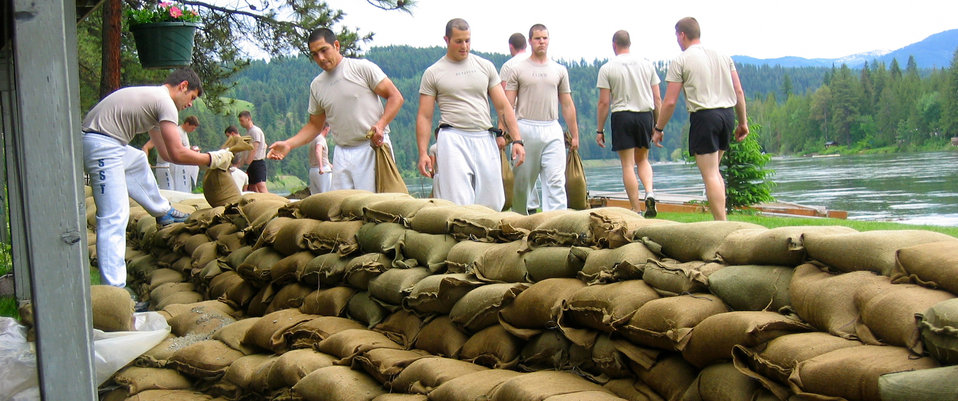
Fairchild Airmen save homes from flooding

Forty student candidates and instructors from the 336th Training Group Survival, Evasion, Resistance and Escape School at Fairchild Air Force Base, Wash., filled approximately 10,000 sandbags in Pend Oreille County, Wash., June 9, 2011, reportedly saving three homes from being flooded.